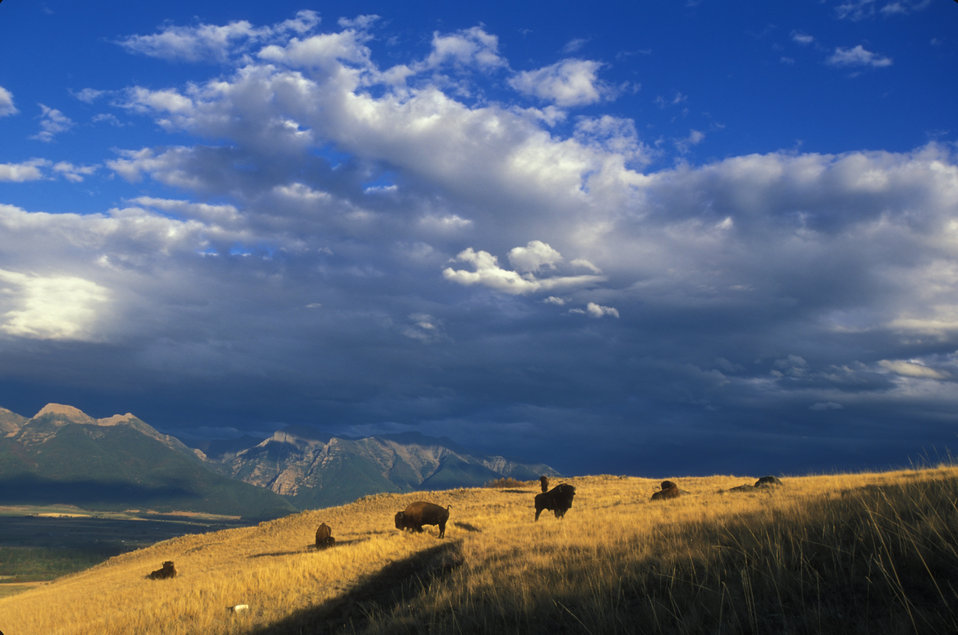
National Bison Range dramatic scenic

Bison graze under a brilliant blue sky on the National Bison Range in Montana.